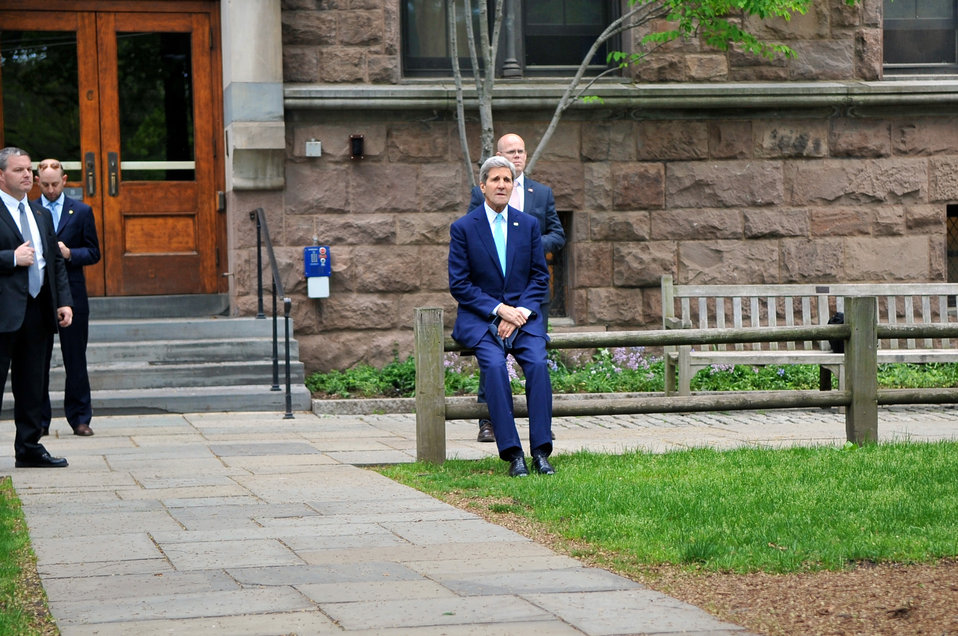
Secretary Kerry Waits to Give Class Day Remarks at Yale University

U.S. Secretary of State John Kerry, a 1966 graduate of Yale University, waits to deliver Class Day remarks upon his return to campus in New Haven, Connecticut, on May 18, 2014.